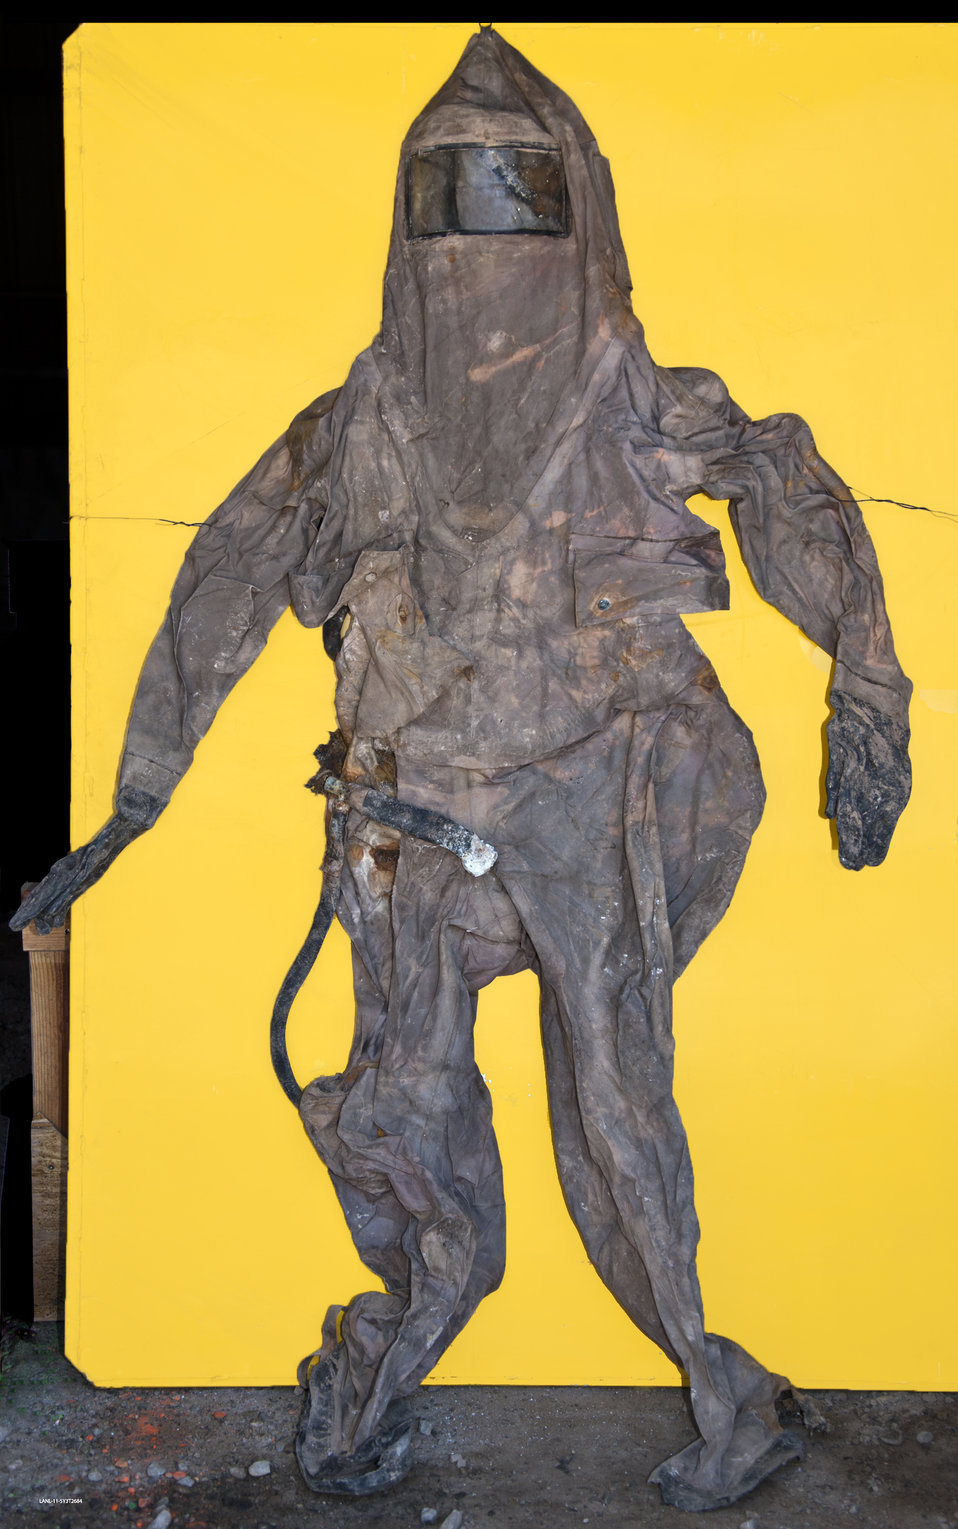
Los Alamos Dig Unveils Items Ranging from Military Trucks to Toothbrush

Workers excavated a radiation protection suit as part of the cleanup of the landfill.

In a $110 million Recovery Act project at Los Alamos National Laboratory, workers are excavating a waste disposal site known as Material Disposal Area B (MDA-B). Completion of the MDA-B cleanup will reduce EM’s legacy footprint by more than 260,000 square feet.